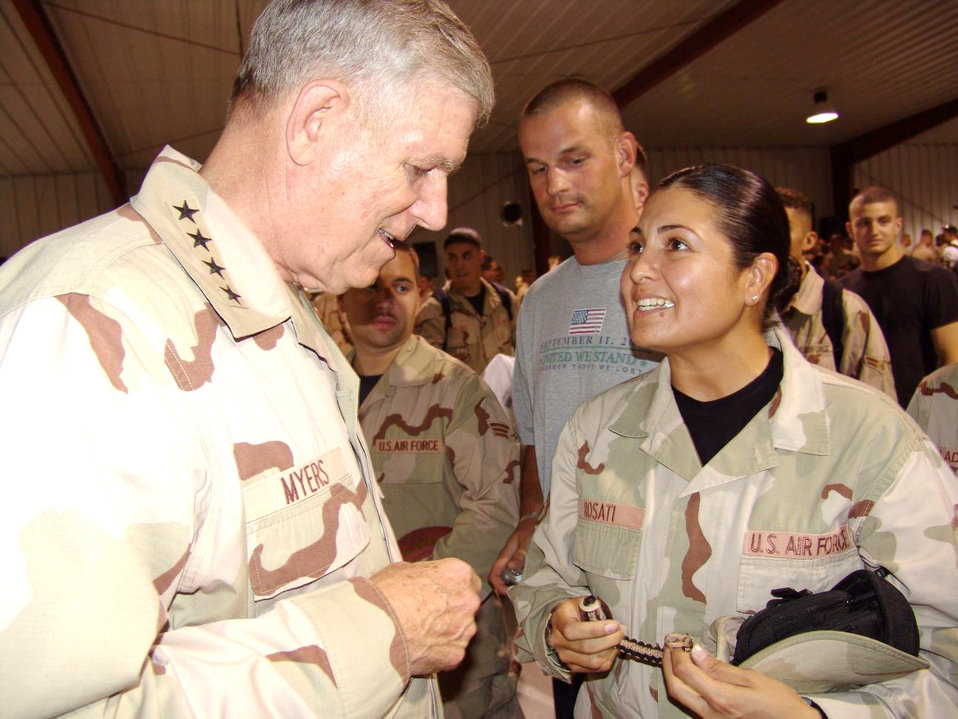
Myers visits deployed Airmen

SOUTHWEST ASIA -- Chairman of the Joint Chiefs of Staff Gen. Richard B. Myers receives a second bracelet from Staff Sgt. Jobette Rosati after the conclusion of a United Service Organizations celebrity tour performance at a forward-deployed location Aug. 16. Sergeant Rosati gave General Myers a green bracelet that she made out of a parachute cord when she was deployed four years ago, which to date, he still keeps on his desk. Sergeant Rosati is assigned to the 386th Expeditionary Logistics Readiness Squadron and is deployed from Little Rock Air Force Base, Ark.